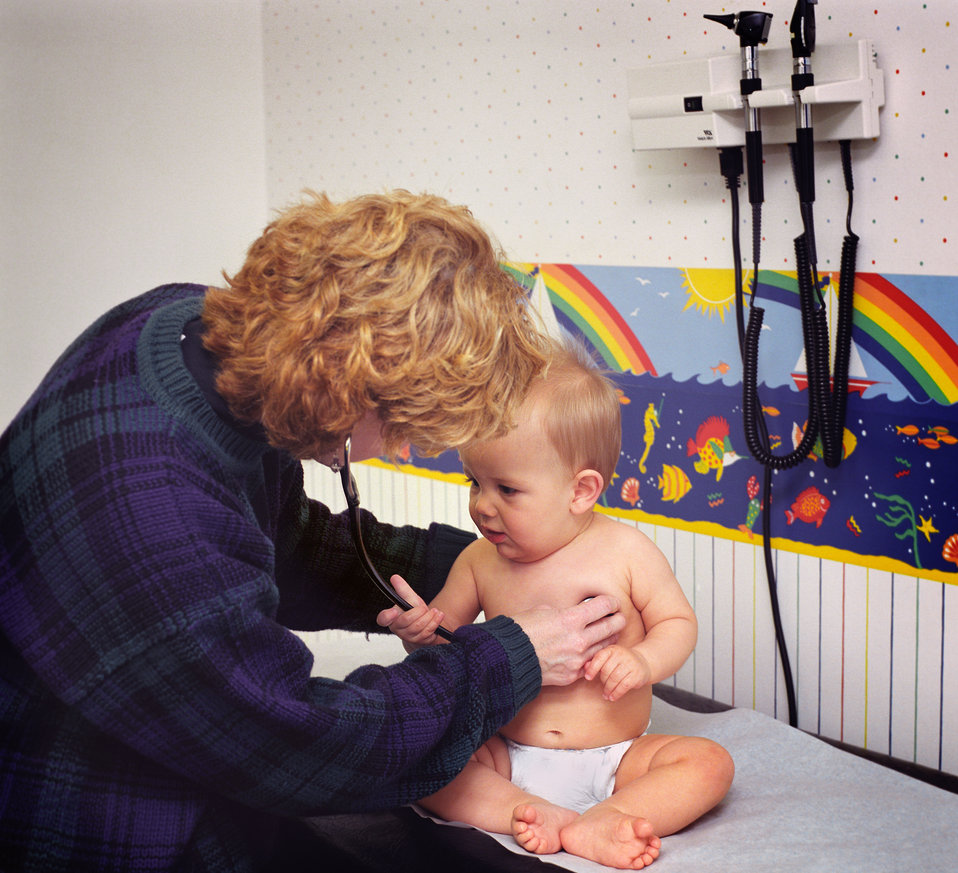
This photograph depicts a physician examining an infant at nine months of age.